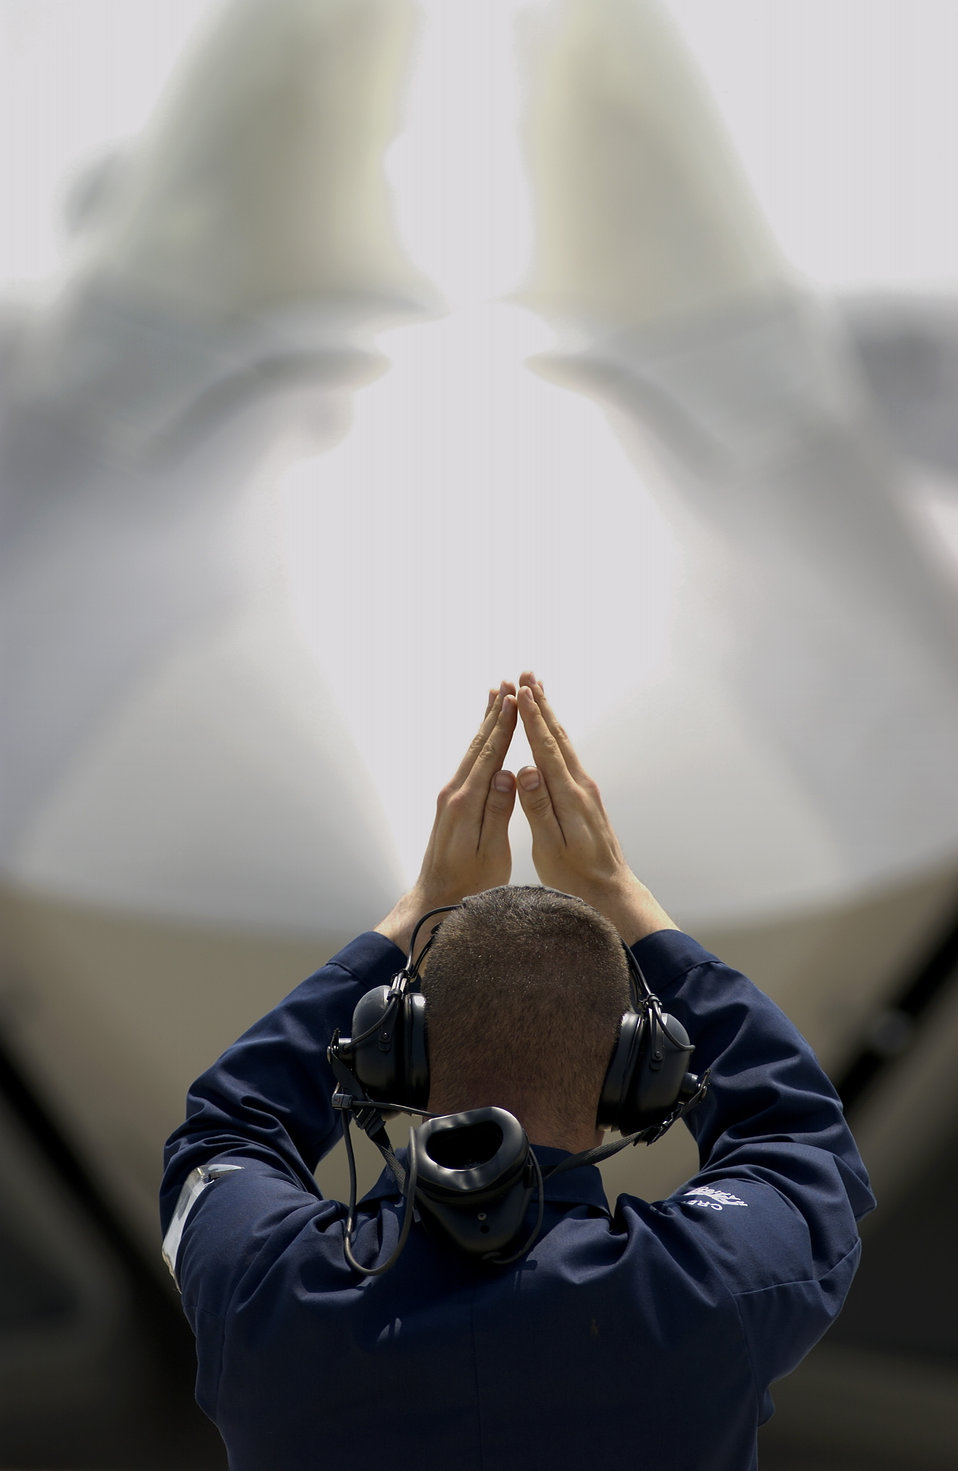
Two more Raptors arrive at Langley

LANGLEY AIR FORCE BASE, Va. -- Airman 1st Class Richard Alexander marshals in Lt. Col. Wade Tolliver as he delivers the second permanent F/A-22 Raptor here June 8. The base's third Raptor also arrived June 8. Colonel Tolliver is the 27th Fighter Squadron director of operations, and Airman Alexander is an F/A-22 assistant crew chief.